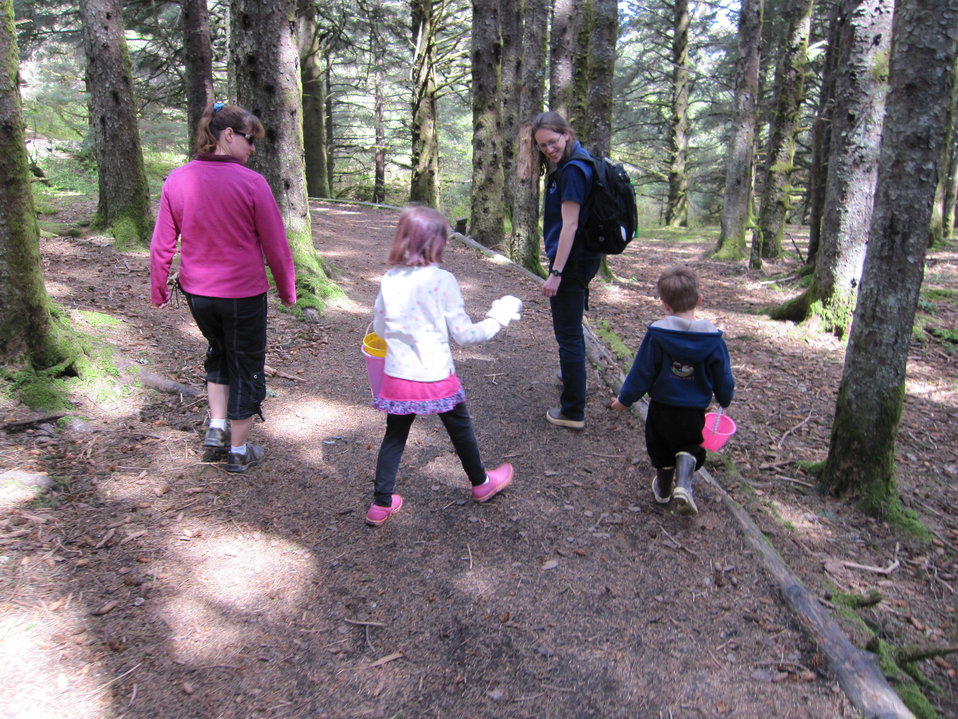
Volunteer Dana Lindauer leads a Happy Trails program

Photo Credit: USFWS
Source: Kodiak NWR